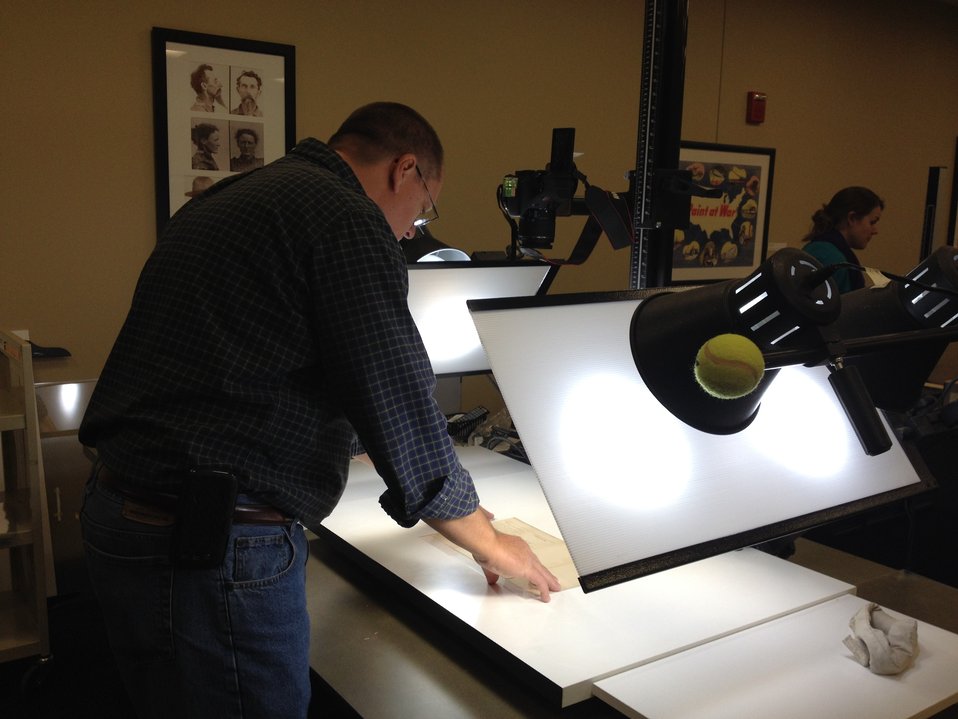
Camera Stand digitization project; Location: National Archives at Kansas City - RMKC Research Room, Kansas City, MO